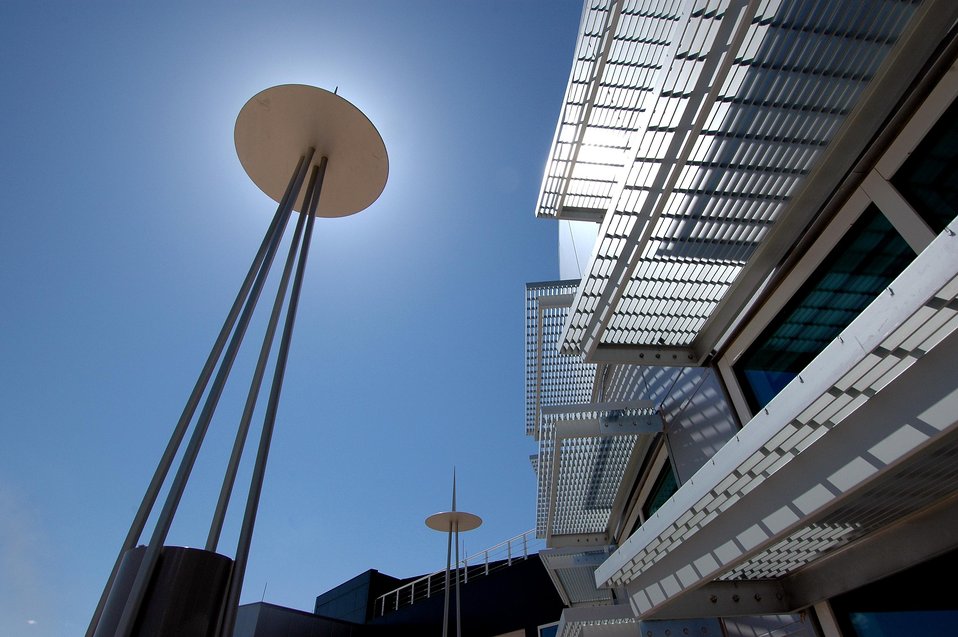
OUTSIDE THE JOINT COMPUTATIONAL ENGINEERING LAB AT SANDIA NATIONAL LABORATORY.

THE NEW JOINT COMPUTATIONAL ENGINEERING LABORATORY CAN HOUSE 175 RESEARCHERS AND SUPPORT STAFF. THE JCEL FACILITY WAS FUNDED BY DOE/NNSA'S ADVANCED SIMULATION AND COMPUTING PROGRAM AND REPRESENTS AND INTEGRAL PART OF THE MICROSYSTEMS AND ENGINEERING SCIENCES APPLICATIONS (MESA) PROJECT. JCEL IS A SIGNIFICANT UPGRADE, CONSOLIDATION AND ENLARGEMENT OF SANDIA'S COMPUTATIONAL CAPABILITIES WHICH ARE IMPORTANT TO DOE/NNSA'S STOCKPILE STEWARDSHIP MISSION.